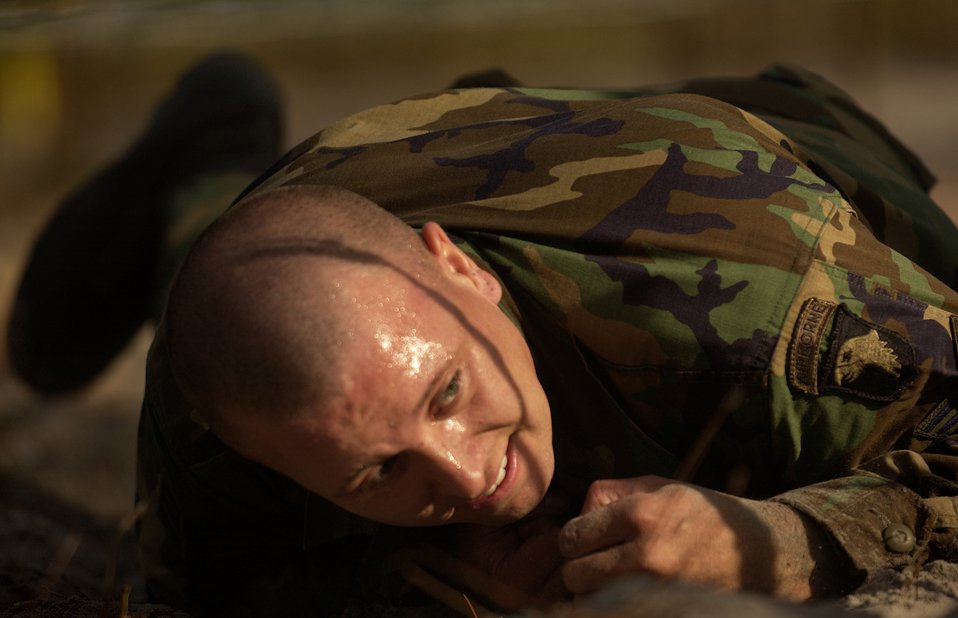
Low crawl

AVON PARK, Fla. -- Staff Sergent Chris Stamper crawls low through an obstacle during Dragon Challenge 04 on Dec. 5. Sergeant Stamper is assigned to the 19th Air Support Operations Squadron at Fort Campbell, Ky.